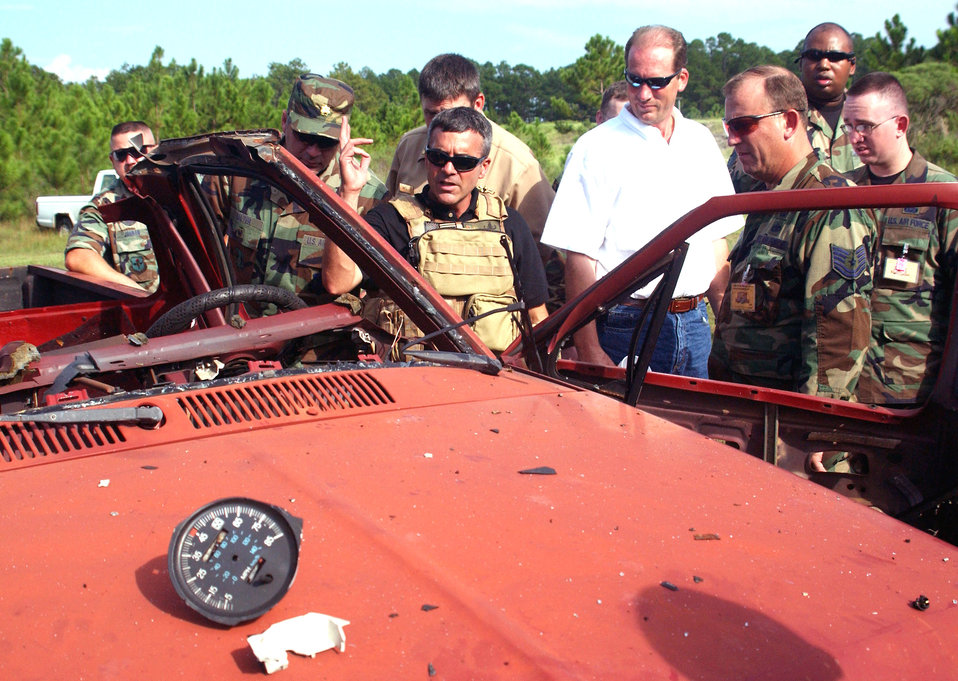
Dynamics of terrorism

Master Sgt. Justin Anderson shows students the results of a vehicle bomb during training Sept. 13 at Hurlburt Field, Fla. Sergeant Anderson is an instructor at the U.S. Air Force Special Operations School's Dynamics of International Terrorism course, which offers students a basic awareness of the motivation, capabilities and threat posed by terrorist groups.